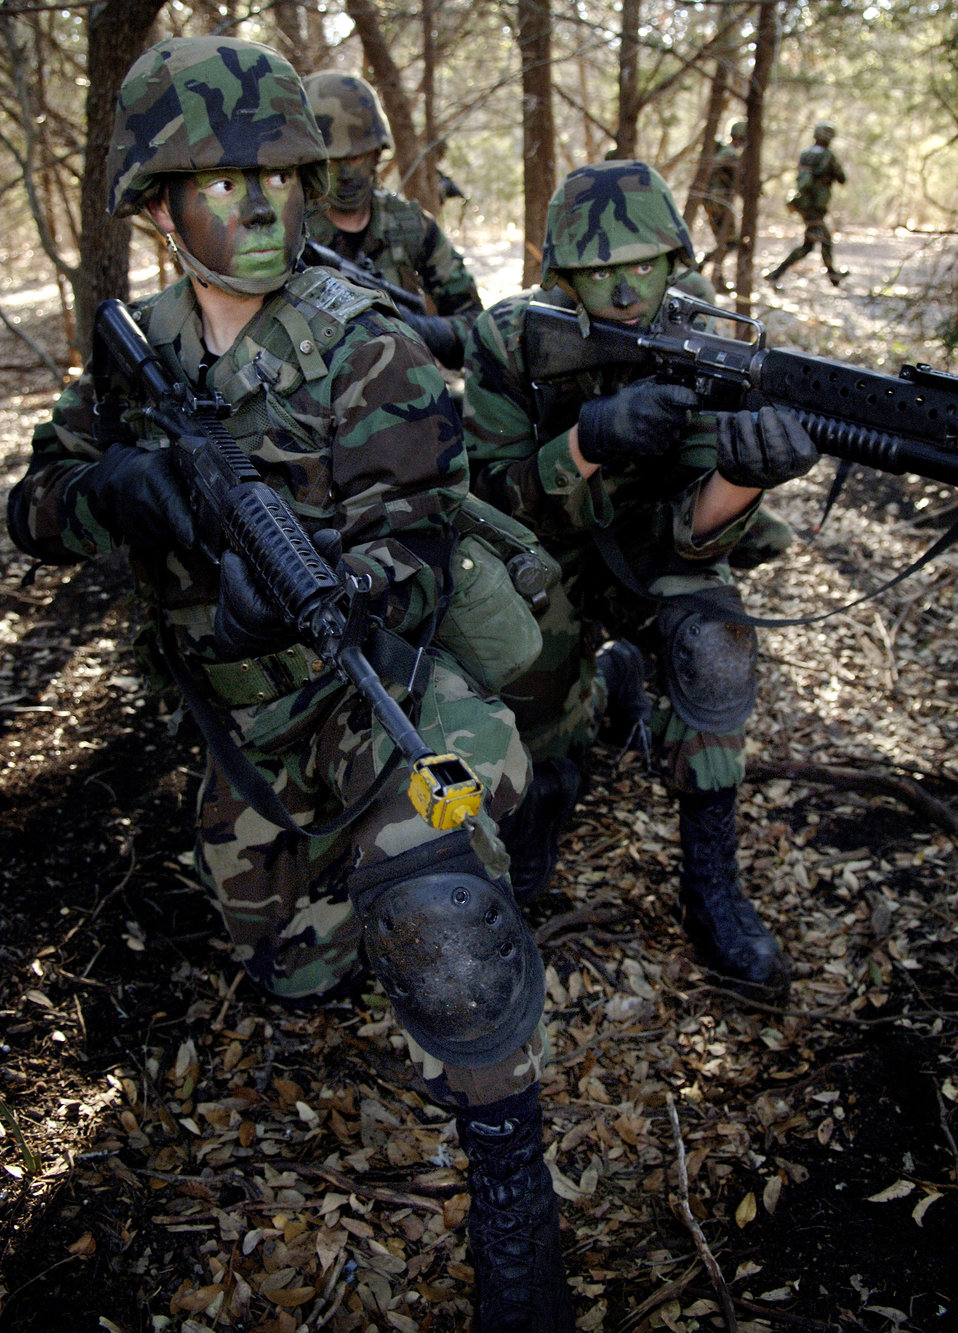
Military ops

LACKLAND AIR FORCE BASE, Texas (AFPN) -- (Front to back) Airmen Heather Simpson, Wayne Stickles and Steve Schepel provide cover while the rest of the fire teams run to the rendezvous point during security forces technical training here Jan. 30. This three-week portion of their training familiarizes Airmen with concepts and tactics used in basic military operations in urban terrain.